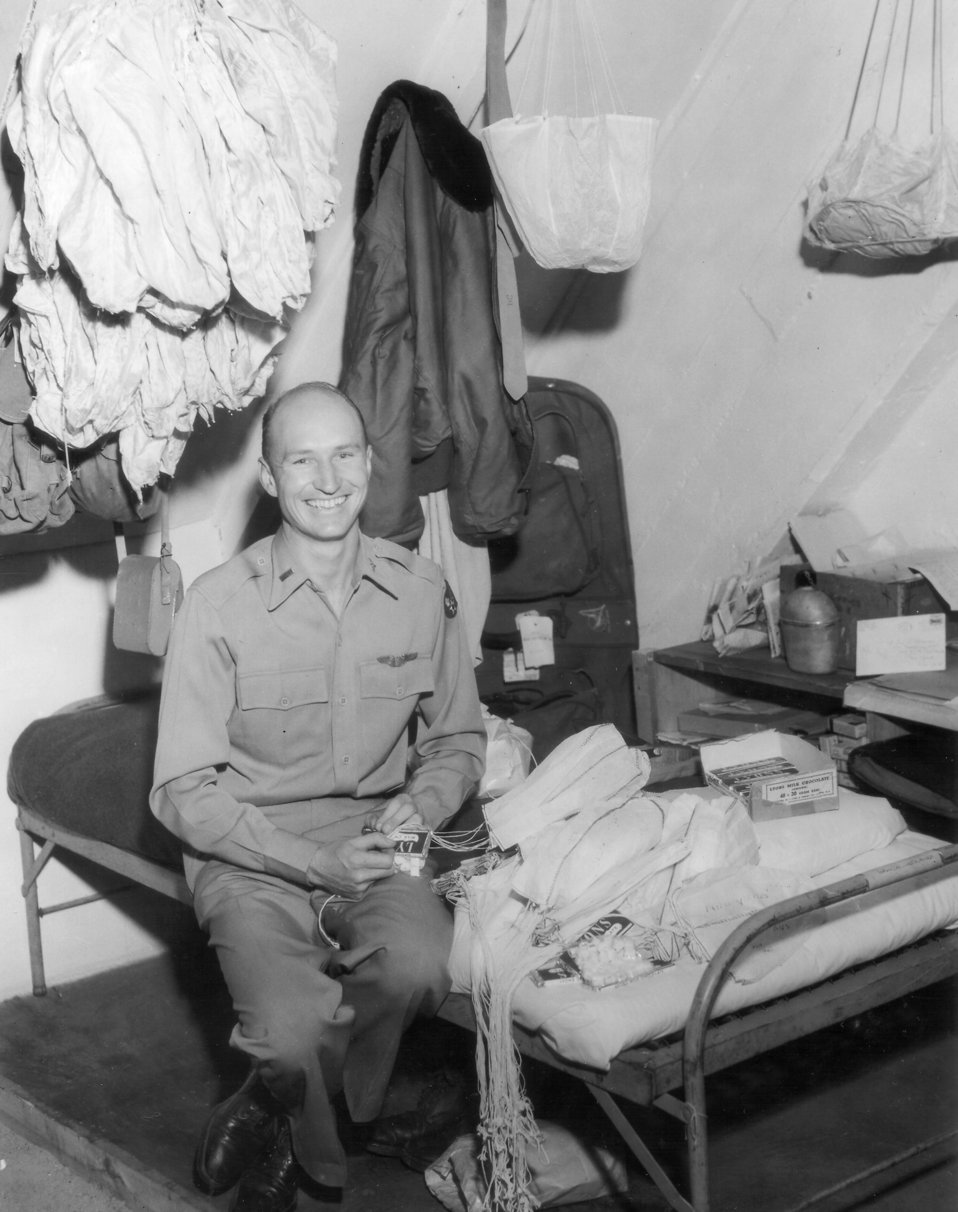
Berlin Airlift

1940's -- 1st Lt. Gail Halvorsen and the 17th Military Air Transport Squadron rig some candy bars to miniature parachutes for German children in Berlin as part of Operation Little Vittles. As his C-54 plane approaches Tempelhof AB, Germany, he drops the homemade parachutes weighted with American candy bars and gum.